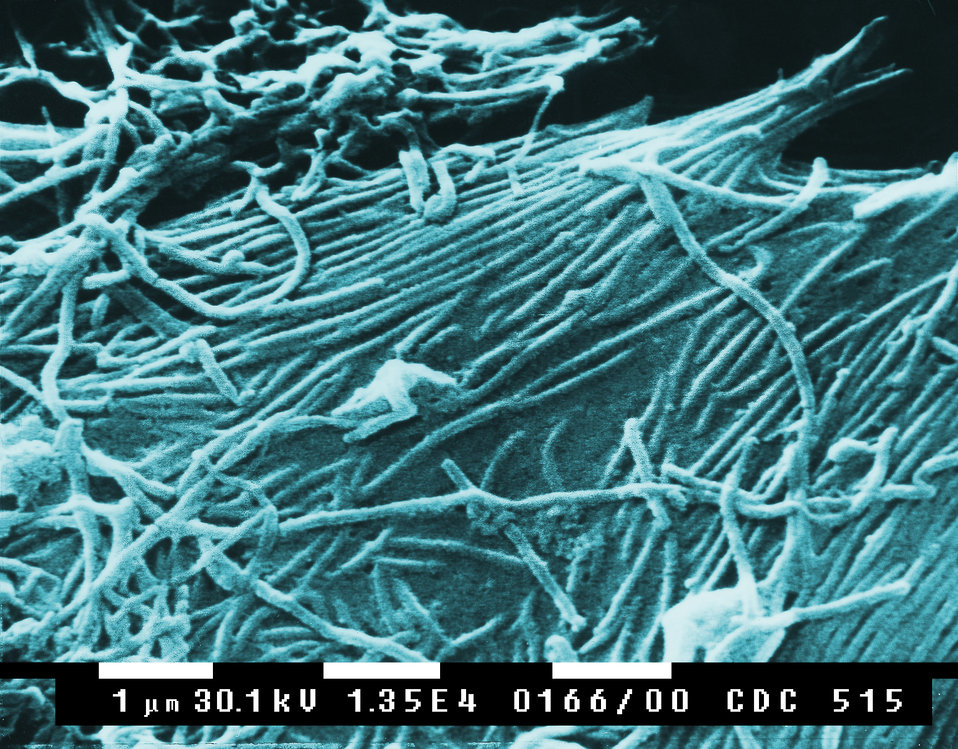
This scanning electron micrograph (SEM) depicts a number of Ebola virions.